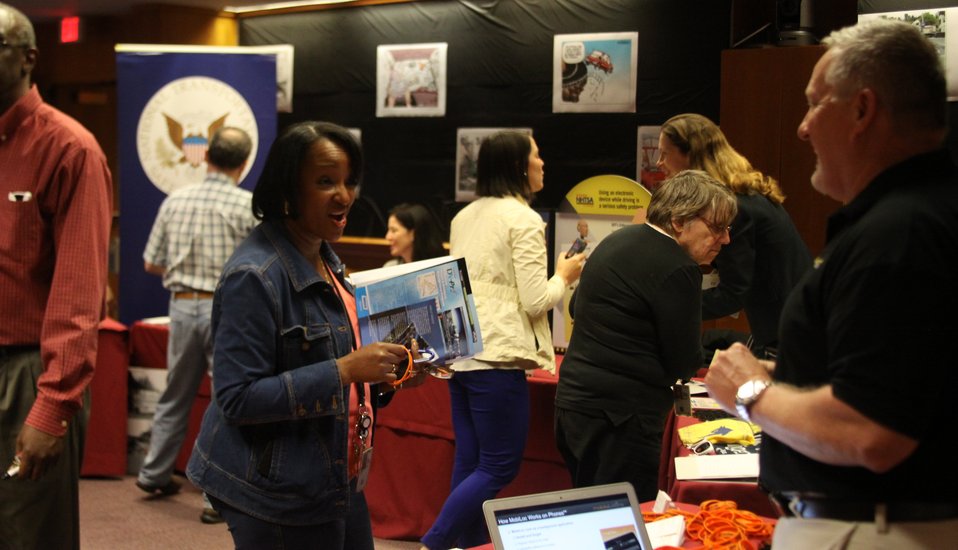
Distracted Driving Technology Showcase April 19, 2013